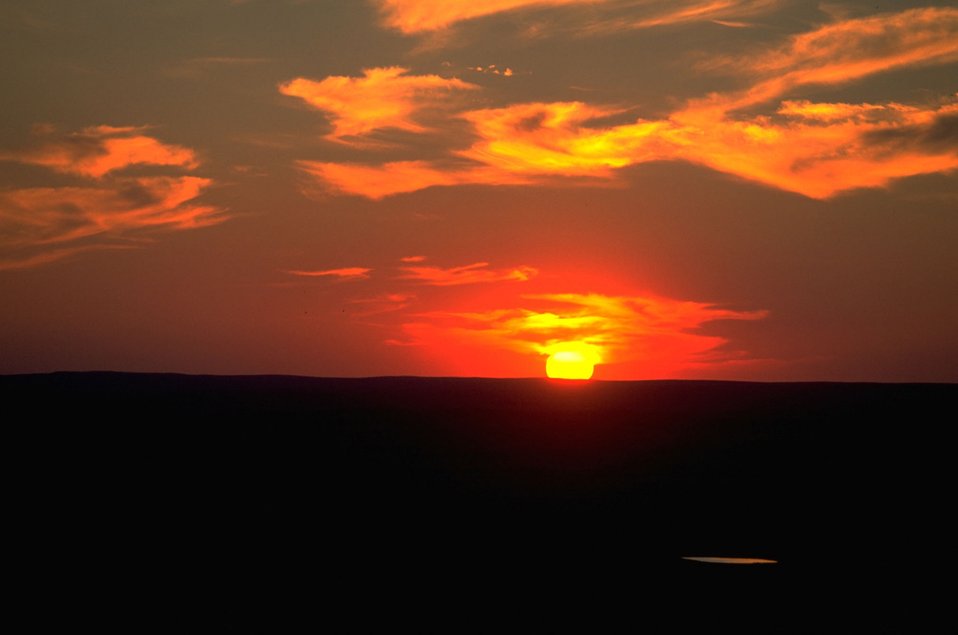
Sunset 35 miles north of Belle Fourche on the Porcupine Creek Allotment